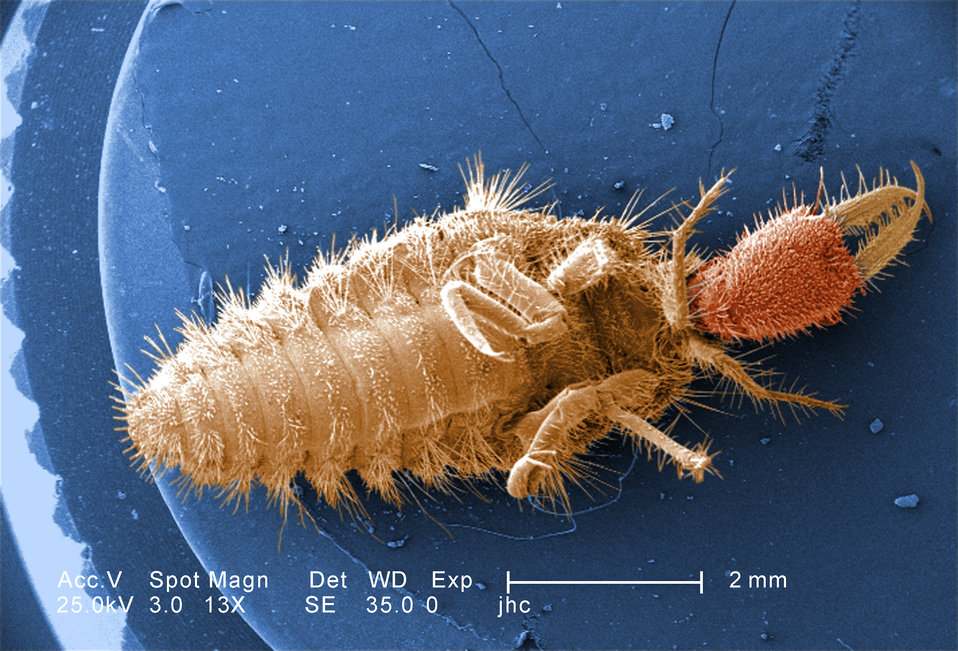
Under a very low magnification of 13X, this digitally-colorized scanning electron micrograph depicted the entire ventral surface of the larval staged antlion, sometime referred to as a 'doodlebugs', because of the trails they leave in the soft sand as they hunt for prey. These arthropods, i.e., jointed legs, undergo dramatic morphologic changes when it metamorphoses into a beautiful flying antlion lacewing.